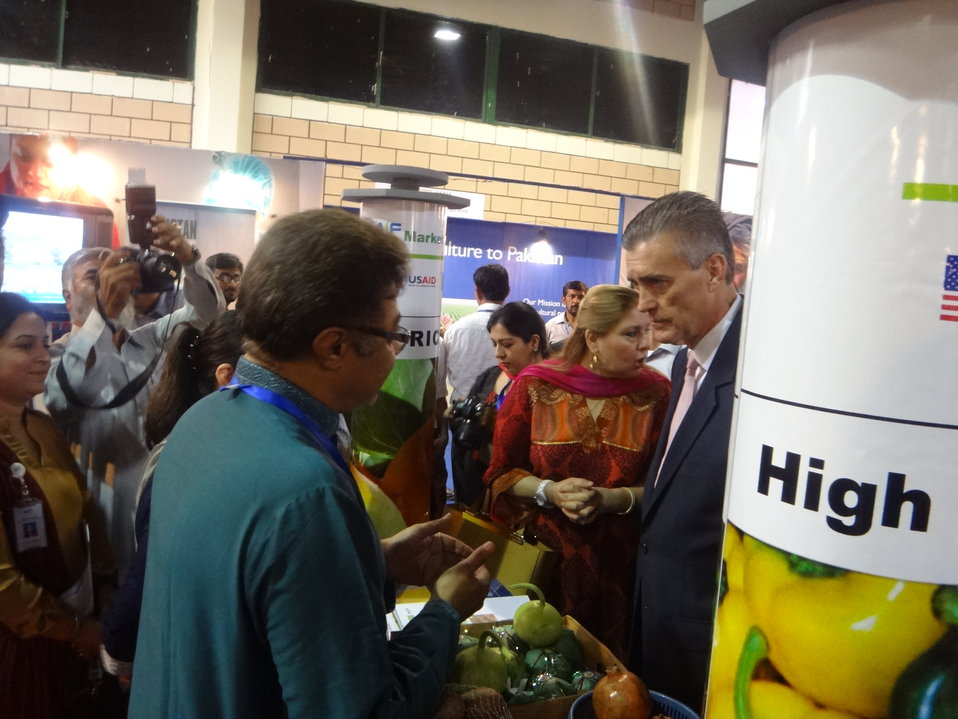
US Ambassador's visit to The Agribusiness Project at TDAP Expo, Karachi, September 27, 2013 (3)